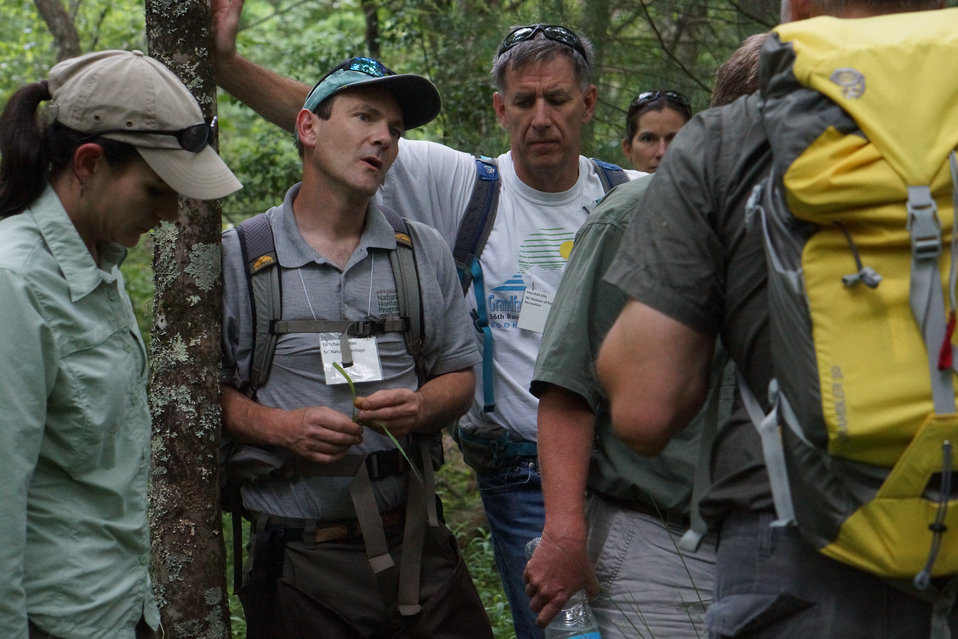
Ed Schwartzman discussing bogs

In May, bog conservationists from Tennessee, North Carolina, and Georgia convened in the north Georgia mountains for the spring, 2014 meeting of the Bog Learning Network. The event provided an opportunity for biologists to see, first hand, the result of management efforts at two north Georgia bogs. More importantly, the outings provided an opportunity to share innovative approaches to bog management, such as the role of the Georgia Plant Conservation Alliance in conserving rare plants and coordinating a cadre of volunteers to work on bog management.

The Bog Learning Network was convened in the winter of 2013 as a way to bring together people working for bog conservation across the Southern Appalachians. Southern Appalachian bogs are one of North America’s rarest habitats and home to many rare plants and animals.